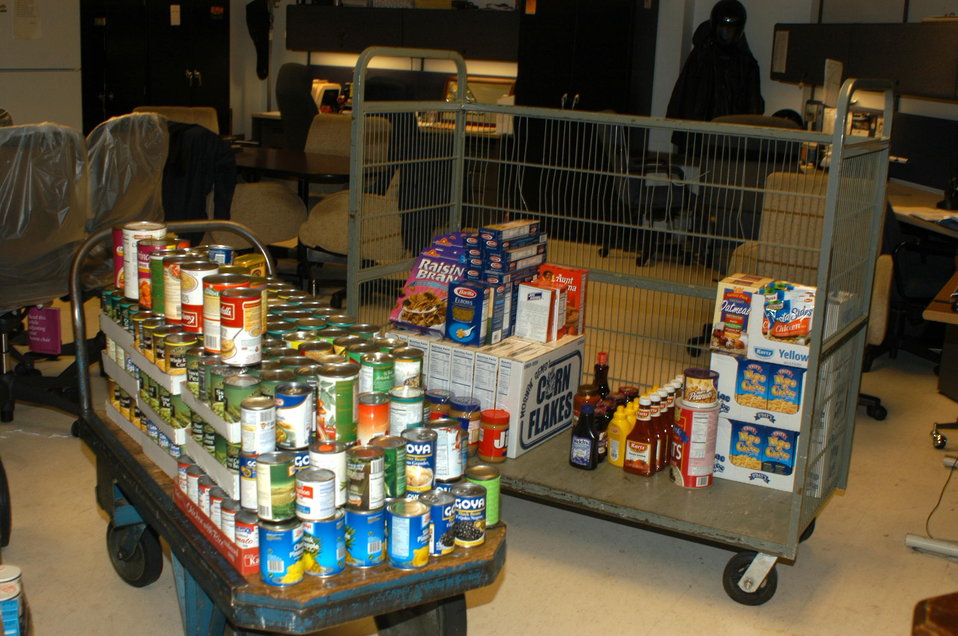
Sierra Exif JPEG